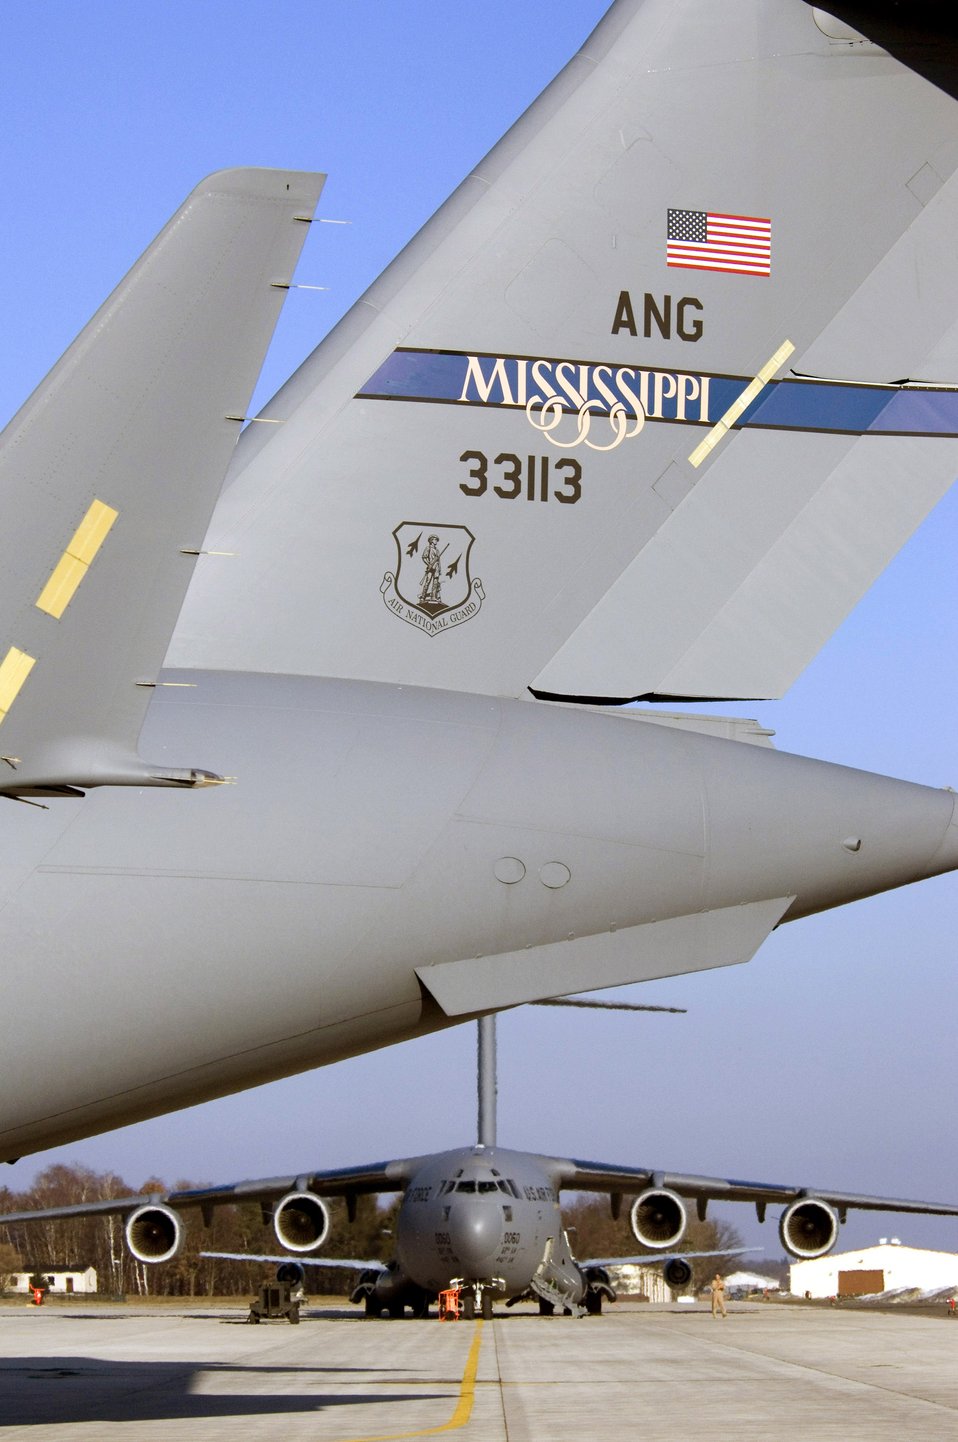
C-17 surpasses its 1 millionth flying hour

A C-17 Globemaster III taxis for takeoff at Ramstein Air Base, Germany, on Sunday, March 19, 2006. The Mississippi Air National Guard transport delivered cargo to Al Asad, Iraq, and returned from Balad Air Base, Iraq, as an aeromedical mission that put the air transport past the 1 millionth hour of flight time.